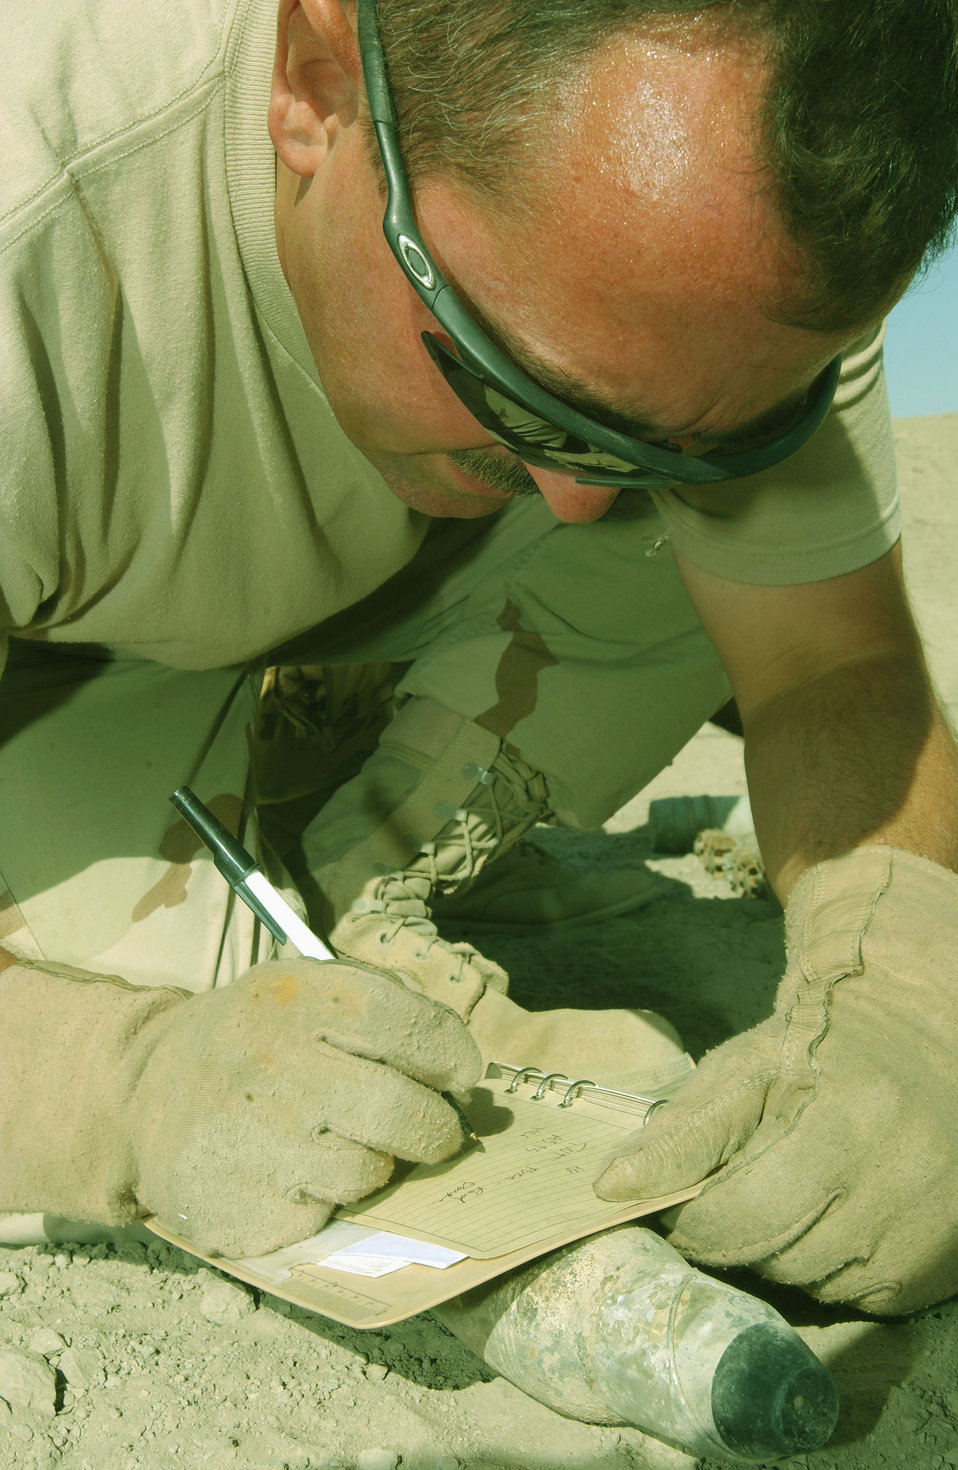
EOD eliminates 'explosive' problems

TALLIL AIR BASE, Iraq -- Tech. Sgt. Tom Cowern documents an Iraqi M-73, a 60 mm high-explosive filled mortar before detonation. Cowern is part of the 332nd Expeditionary Civil Engineer Squadron's explosive ordnance disposal flight here.